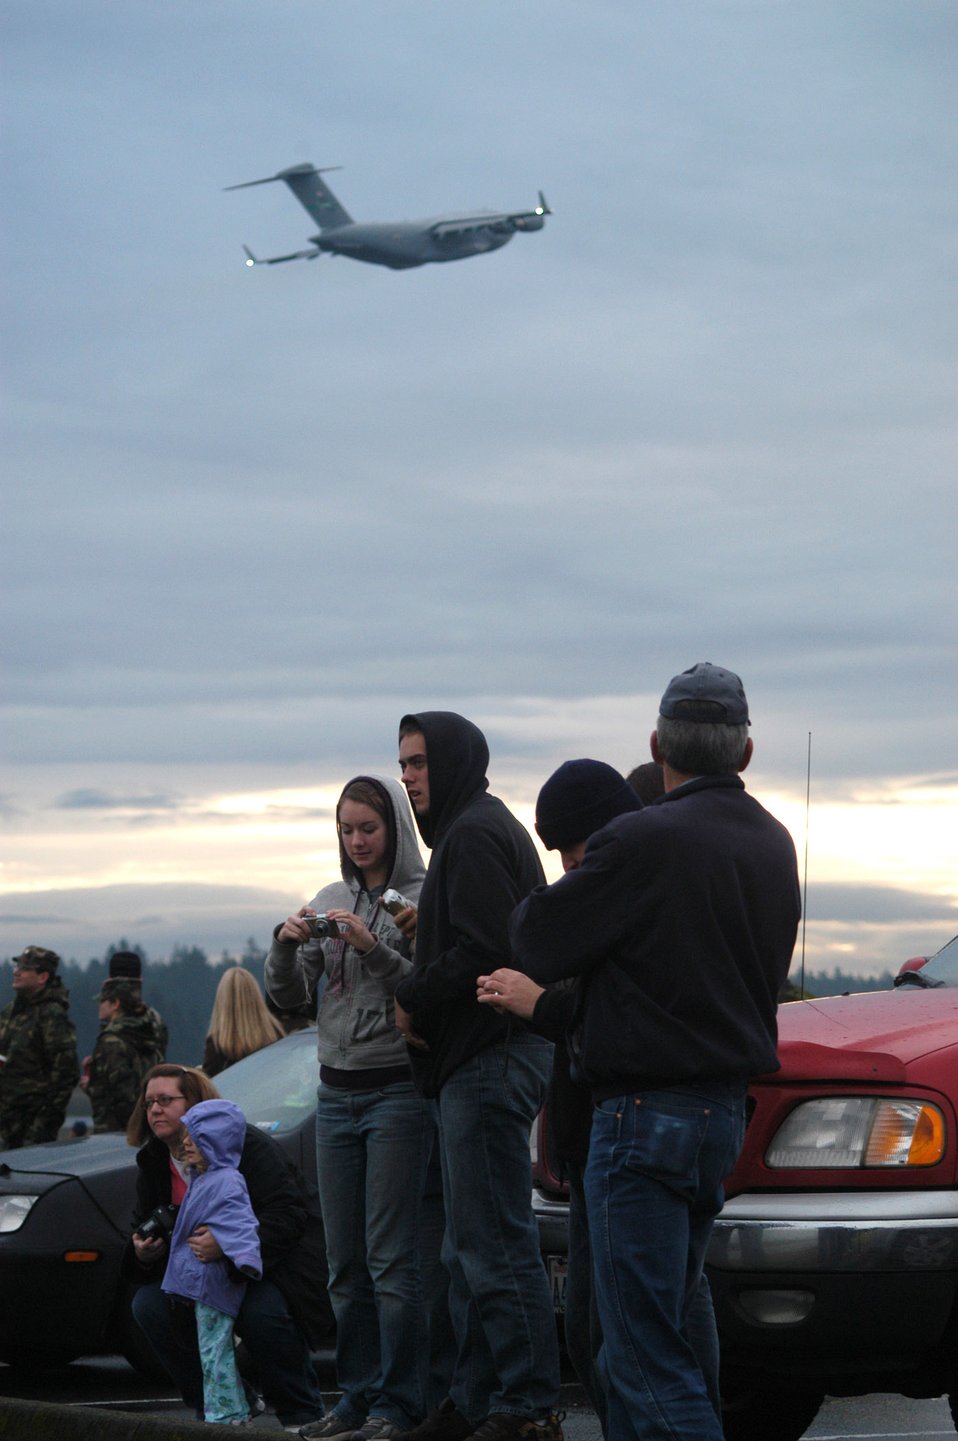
10 Globemaster IIIs fly in formation over Washington state

A group of onlookers watch a C-17 Globemaster III formation training excercise Dec. 20 at McChord Air Force Base, Wash.